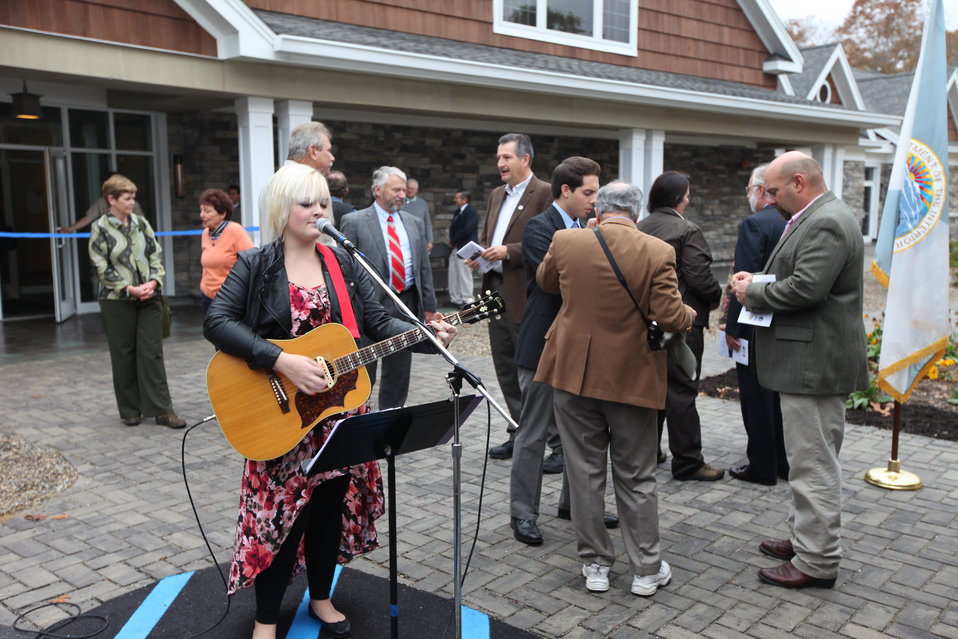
Delaney Haefner sings at Visitor Center Opening.

Delaney Haefner performed an original song about National Wildlife Refuges penned by Cathy Meinhold.